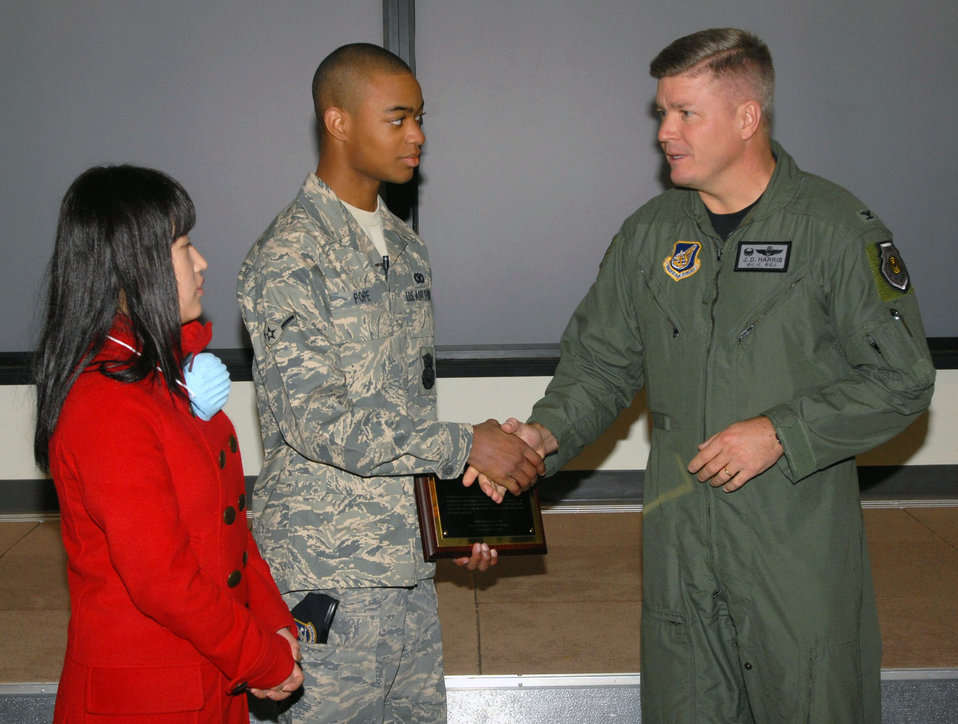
Lifesaving Airman, patient meet for first time

Colonel J.D. Harris presents his commander's coins to Airman Tamarias Pope and You Jin Pak during her Nov. 21 visit to Kunsan Air Base, South Korea. Airman Pope of the 8th Security Forces Squadron donated AB negative blood, which is rare among the South Korean population and specifically for Ms. Pak. The blood he donated ultimately saved her life. Colonel Harris is the 8th Fighter Wing commander.